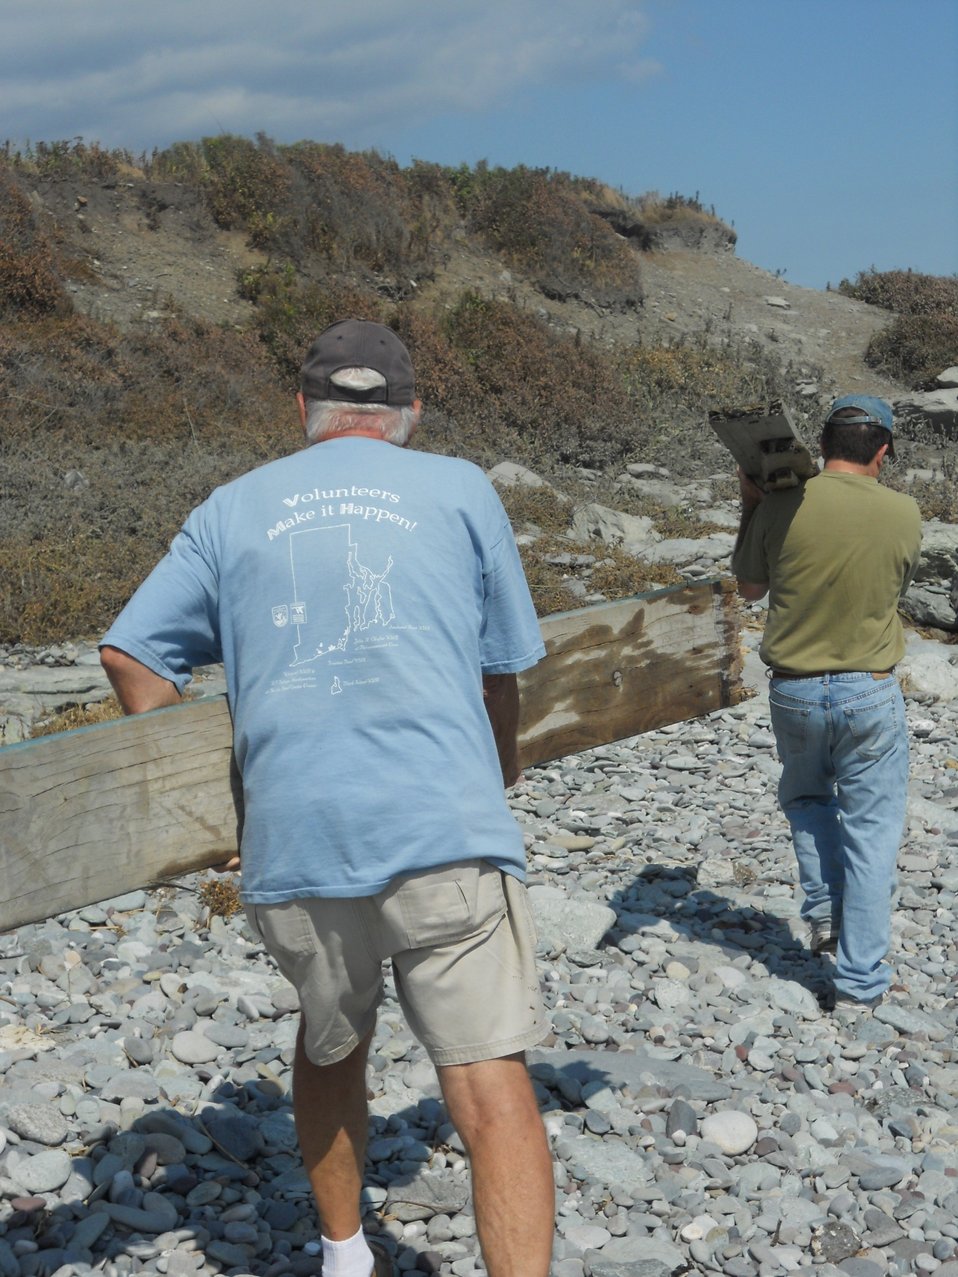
Cleaning up After Irene

Volunteers have pitched in to help clean up debris on national wildlife refuges in Rhode Island after Hurricane Irene. Janis Nepshinsky/USFWS photos.